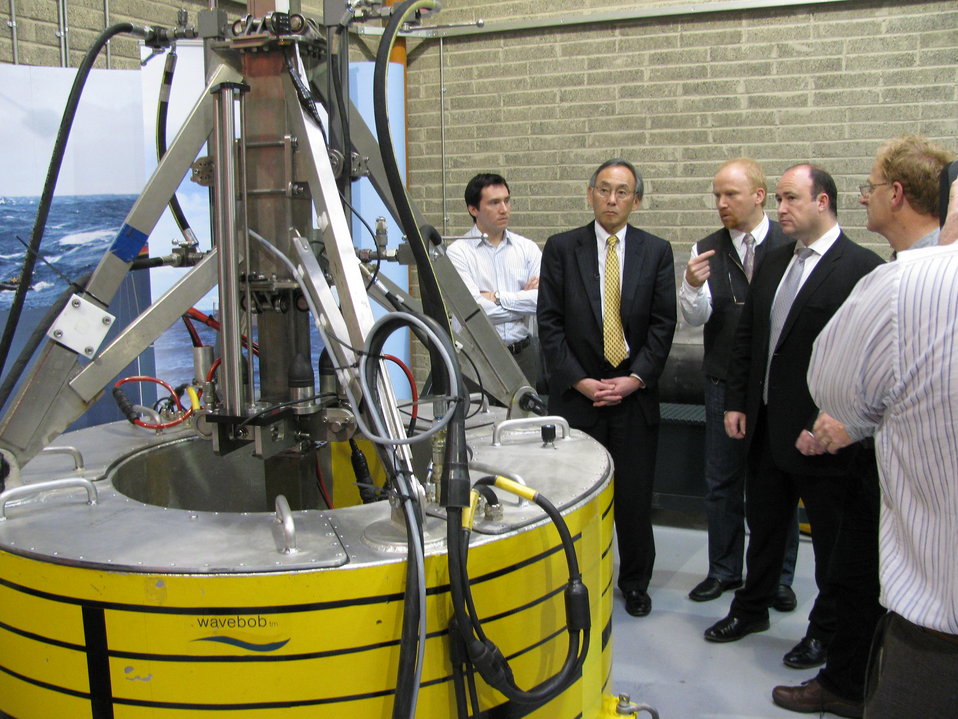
Secretary Chu tours Wavebob, a leading wave power technology company in Ireland that is partnering with the United States to harness the clean, inexhaustible energy potential of America’s coastal areas. Pictured is a prototype wave energy device, which at full scale would be 22 meters across and 50 meters tall, producing up to 1.5 megawatts of electricity per unit.